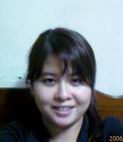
中文（繁體）: 個人圖像。